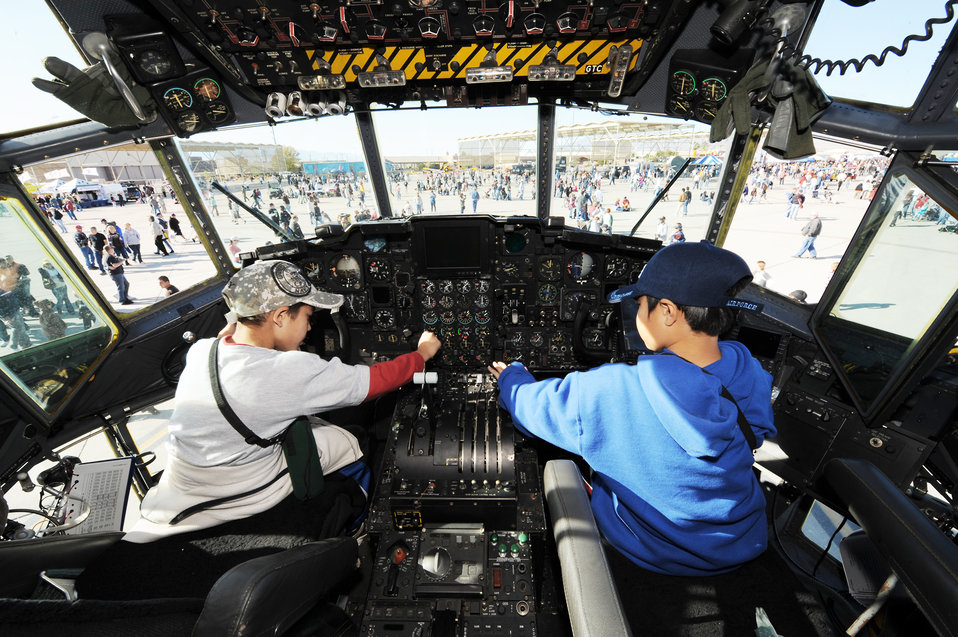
Thunderbirds close air show season

Kentaro Slack, age 9 (left) and Yuta Nakamura, age 8, try out the controls in a MC-130 Combat Talon's cockpit during the 2009 Aviation Nation at Nellis Air Force Base, Nev., Nov 14, 2009. The open house is an opportunity for the Las Vegas community to view aerial demonstrations and static displays of various aircraft from the military.